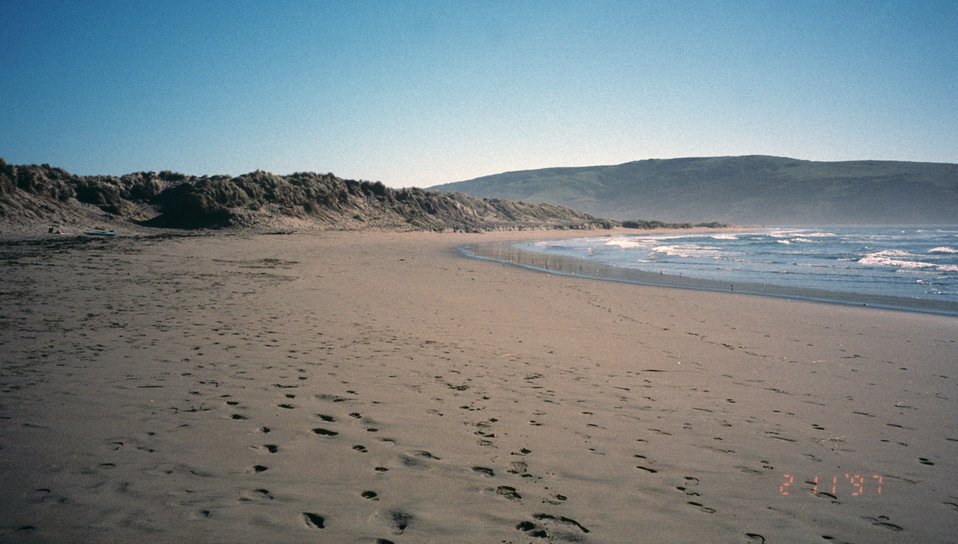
Dillon Beach